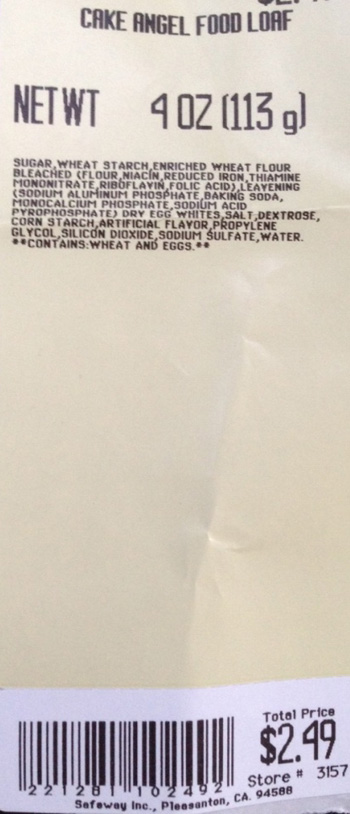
RECALLED – Angel Food Cakes

September 26, 2013 – Product Recall – Safeway Recalls Several Varieties of Angel Food Cake Due to Undeclared Soy and Milk Allergens.